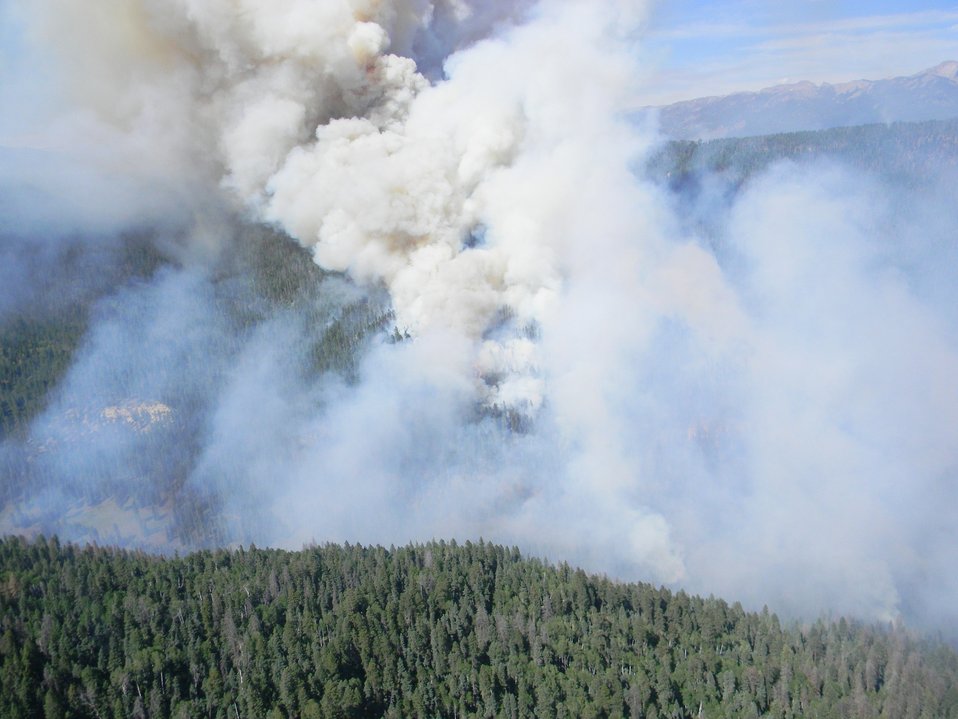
The Little Sand Wildfire burns in the San Juan National Forest near Pagosa Springs, CO, on Tuesday, June 5, 2012. The wildfire was started by a lightening strike on May 13, 2012. The fire is in rugged and inaccessible terrain, north of the Piedra River, and is currently estimated at 14,224 acres with 30% containment as of June 20, 2012.